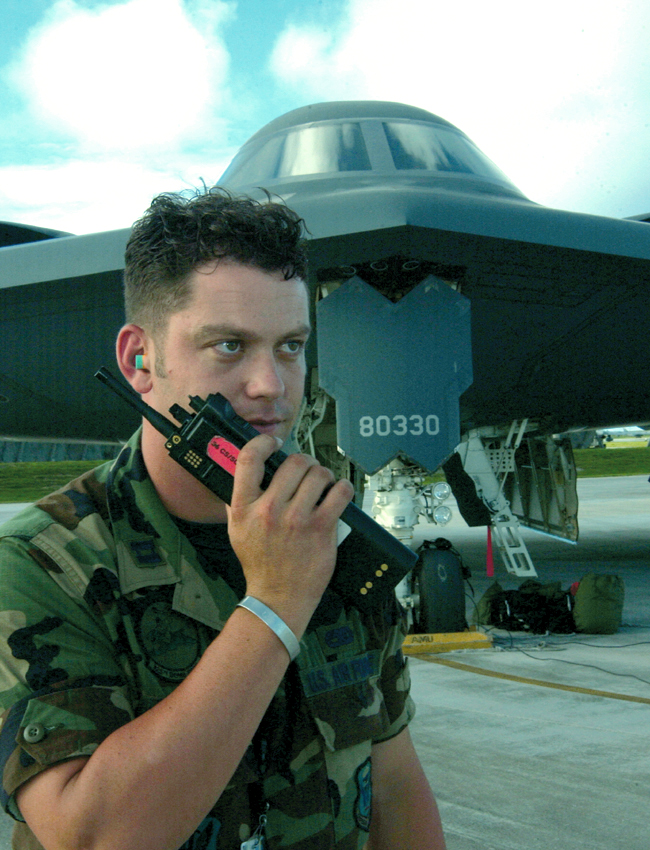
Managing the airfield

Capt. Tim Beck talks with airfield management recently during a Cornet Bugle 49 exercise at Andersen Air Force Base, Guam. Captain Beck is assigned to the 509th Aircraft Maintenance Squadron at Whiteman AFB, Mo. He is deployed supporting B-2 Spirit bomber operations as part of Air Combat Command's ongoing global power missions. The mission enables aircrews to train for long flights from United States to overseas locations.